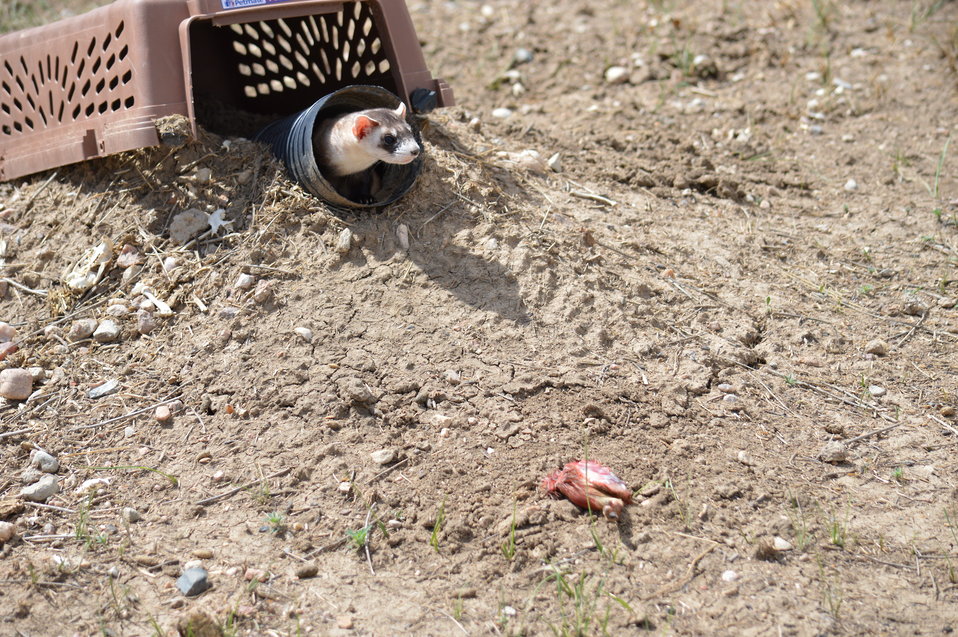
Interns visit the NBFFCC

In the summer of 2012, USFWS Region 6 interns visited the National Black-footed Ferret Conservation Center (NBFFCC) in Colorado to learn how the program reintroduces the endangered Black-footed ferret back into its native habitat.